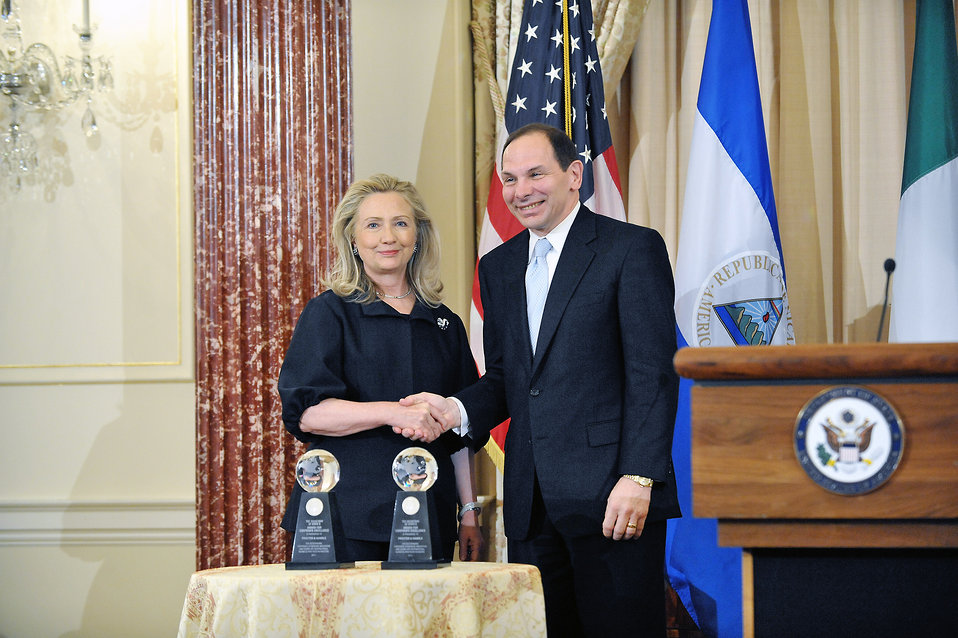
Secretary Clinton Presents the Awards for Corporate Excellence

U.S. Secretary of State Hillary Rodham Clinton presents the Awards for Corporate Excellence (ACE) to Sahlman Seafoods, Incorporated, in Nicaragua; Procter and Gamble in Nigeria; and Procter and Gamble in Pakistan, at the U.S. Department of State in Washington, D.C., on January 18, 2012.